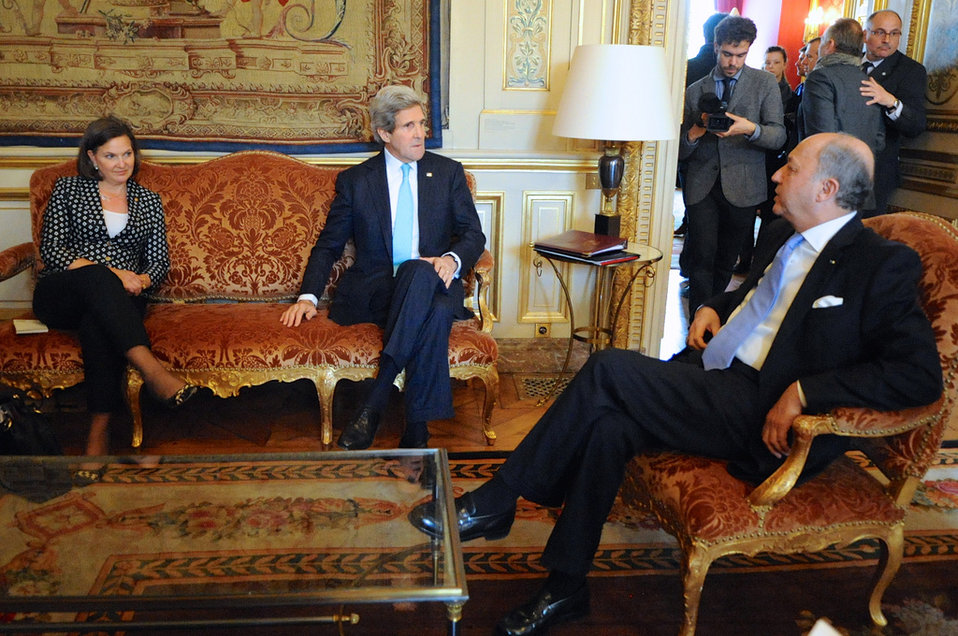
Secretary Kerry, Assistant Secretary Nuland Meet With French Foreign Minister Fabius

U.S. Secretary of State John Kerry and Assistant Secretary for European and Eurasian Affairs Toria Nuland meet with French Foreign Minister Laurent Fabius in Paris on March 30, 2014, before Kerry and Nuland sat down with Russian Foreign Minister Sergey Lavrov to discuss Ukraine.